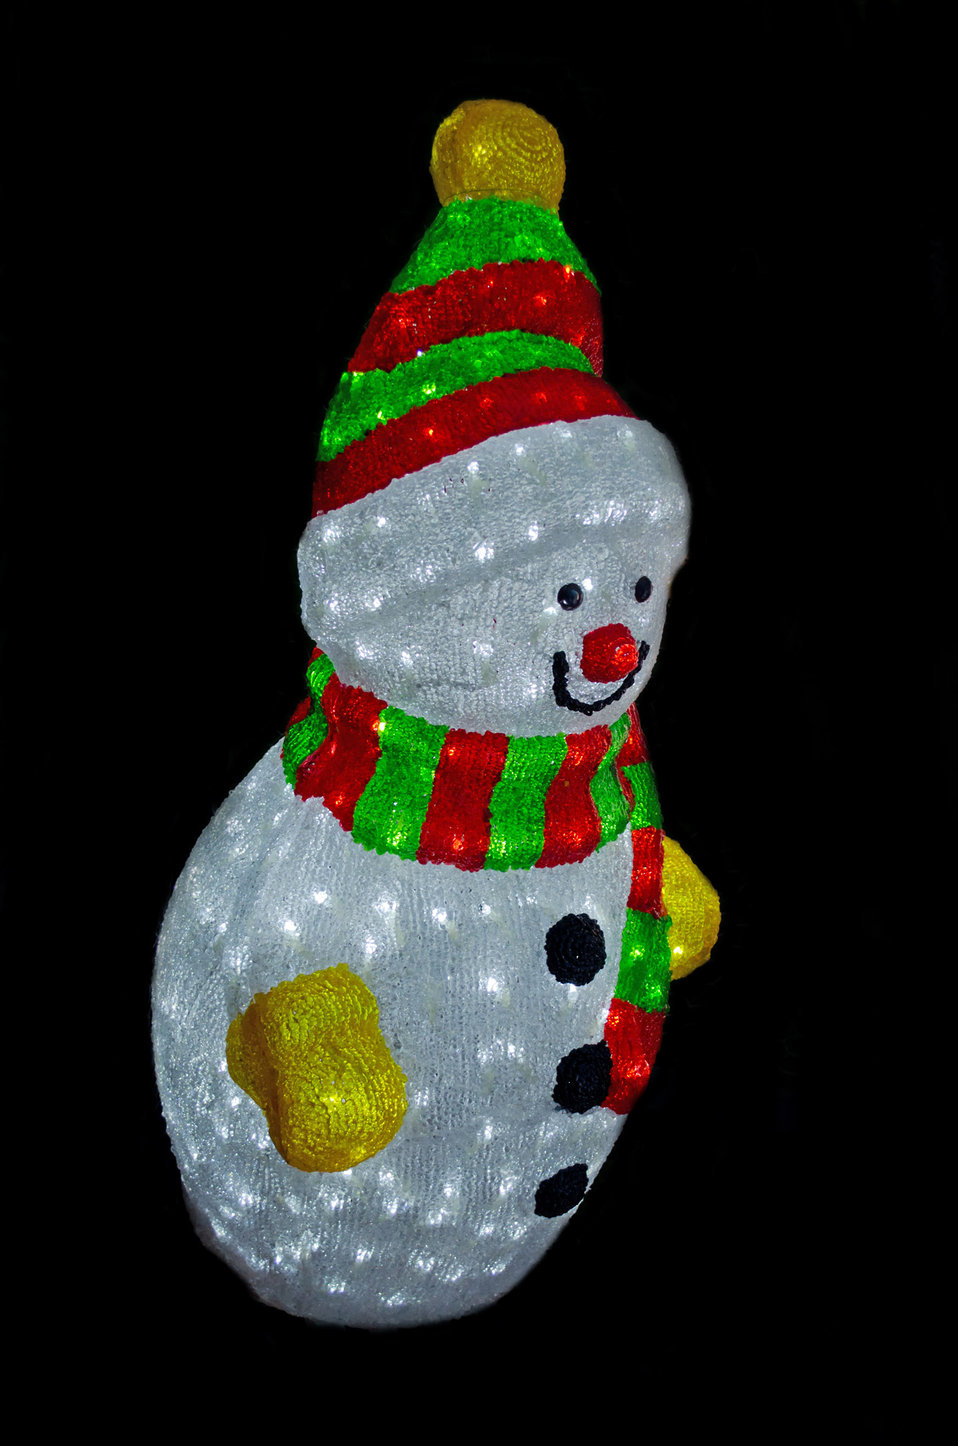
Christmas snowman.